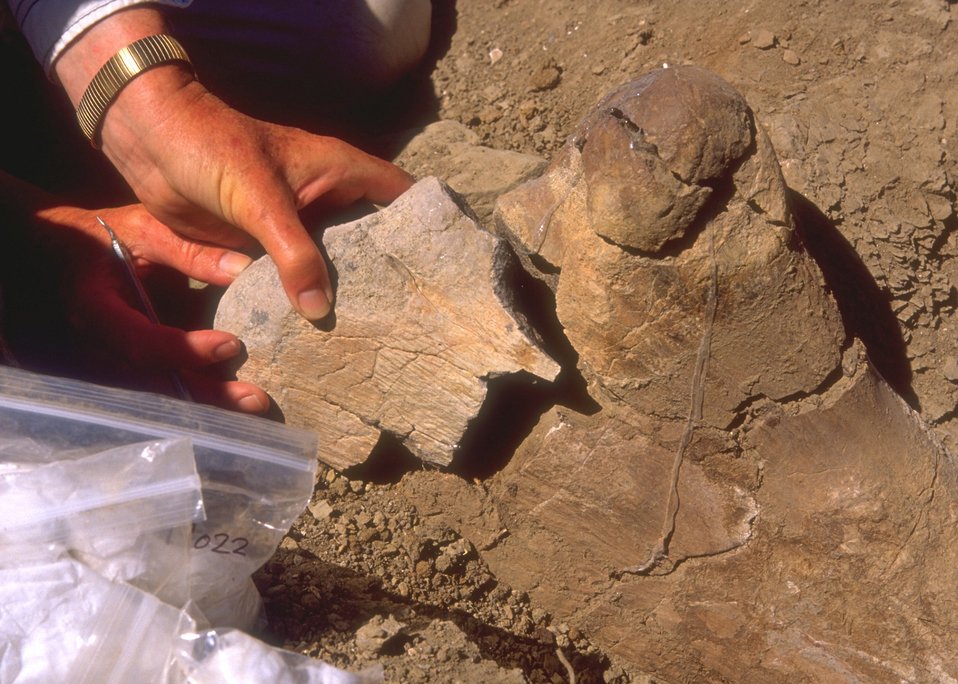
Paleontologist working a dig for dinosaur bones, Lance Creek Fossil Area, Newcastle Field Office.